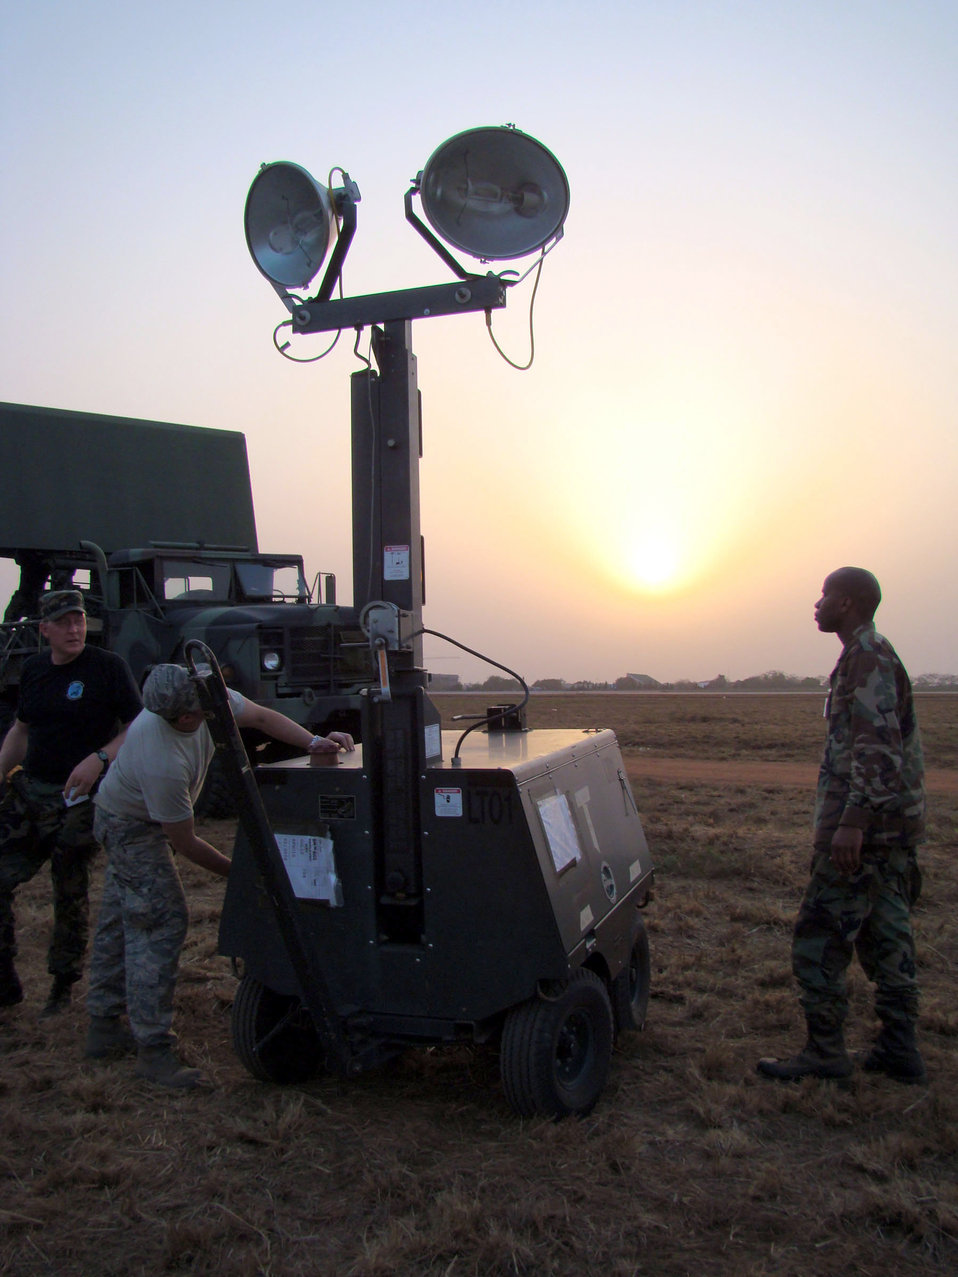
Multiservice team provides presidential support in Africa

Capt. Cheo Stallworth joins Capt. Anthony Lomedico (center) and Tech. Sgt. Gregory Carr as they set up an FL-1D lightall Feb. 13 in Accra, Ghana. The mobile lighting unit will be used during night operations on the airstrip in Accra. The Airmen are members of a multiservice team who have deployed to the African continent to providing support for President George Bush's five-nation visit. Captain Stallworth is assigned to the 1st Combat Communications Squadron at Ramstein Air Base, Germany, Captain Lomedico is an airspace battle manager, and Sergeant Carr is a satellite communications technician. Captain Lomedico and Sergeant Carr are both from the 603rd Air Control Squadron at Aviano AB, Italy.